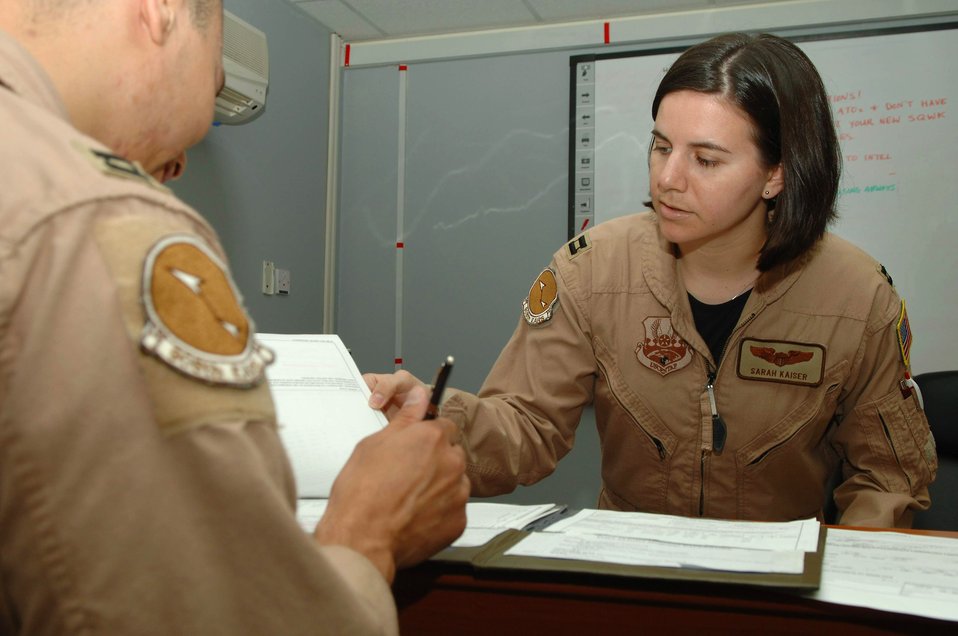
Airmen expand Air Force global reach with KC-10s

Capt. Sarah Kaiser gives mission paperwork to a KC-10 Extender aircrew member prior to a mission brief April 1 at a base in Southwest Asia. Providing 6.5 million pounds of jet fuel weekly, the KC-10 and the Airmen of the 380th Air Expeditionary Wing who support it give global reach to U.S. and coalition aircraft supporting operations Enduring Freedom and Iraqi Freedom. Captain Kaiser is the 908th Expeditionary Air Refueling Squadron assistant director of operations.